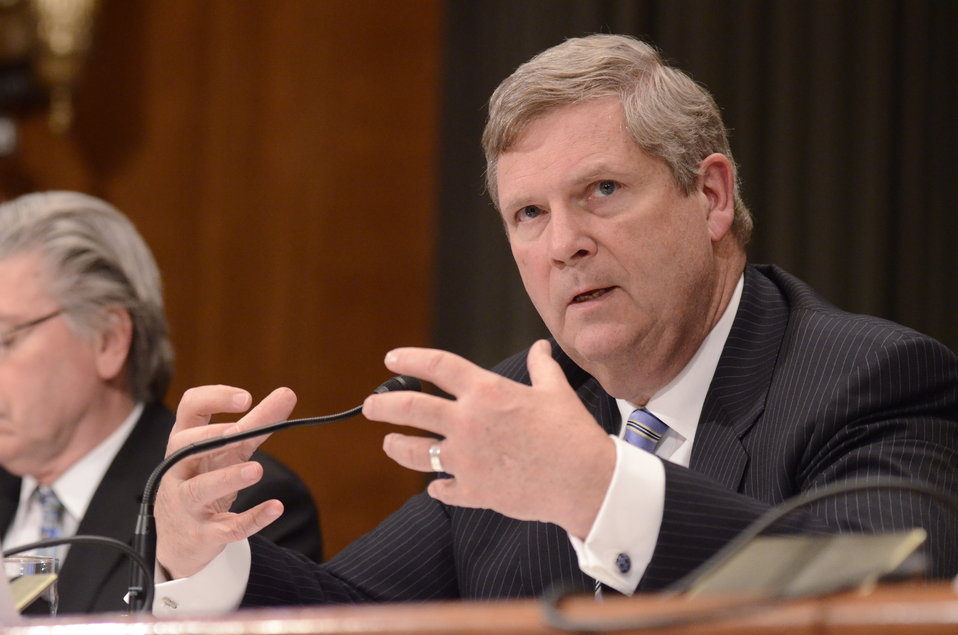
Agriculture Secretary Tom Vilsack testifies before the Senate Agriculture Appropriations Committee on the fiscal year 2013 budget at the Dirksen Senate Office Building in Washington, D.C., on Thursday, March 29, 2012.